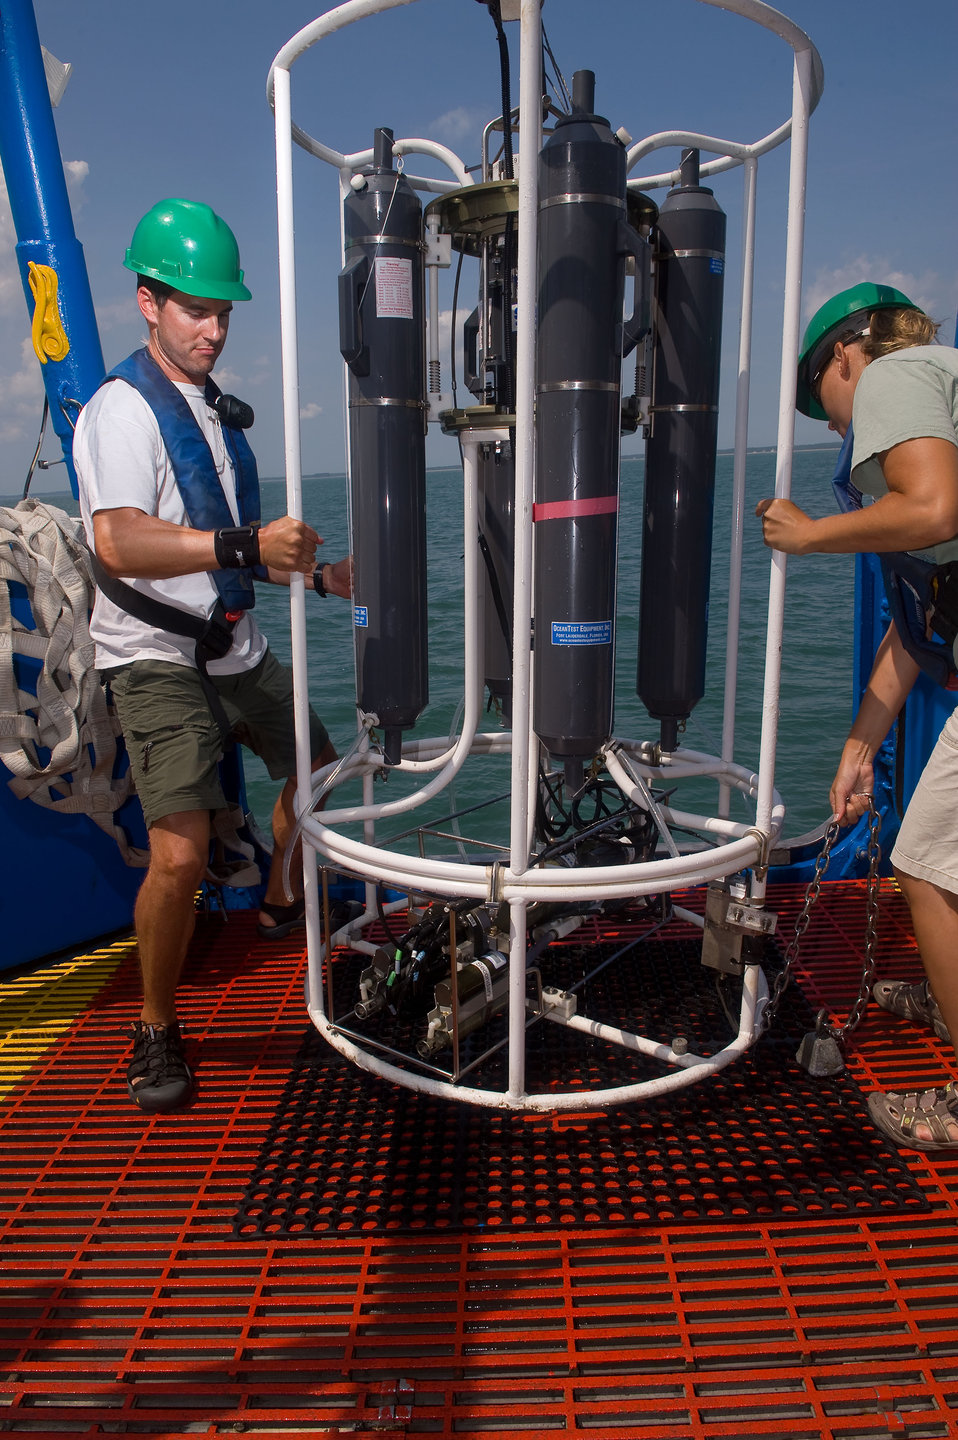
August 2010, Bringing the CTD back onboard

Sensing device called the SeaBird Conductivity, Temperature Depth (CTD). The device has measures conductivity of water to determine salinity, temperature, and depth. Data is transmitted aboard and plots of variables recorded as the device is lowered through water column. Lids on the grey bottles are closed remotely to capture water samples from specific depth for further testing. Bill Richardson, EPA Region 3.